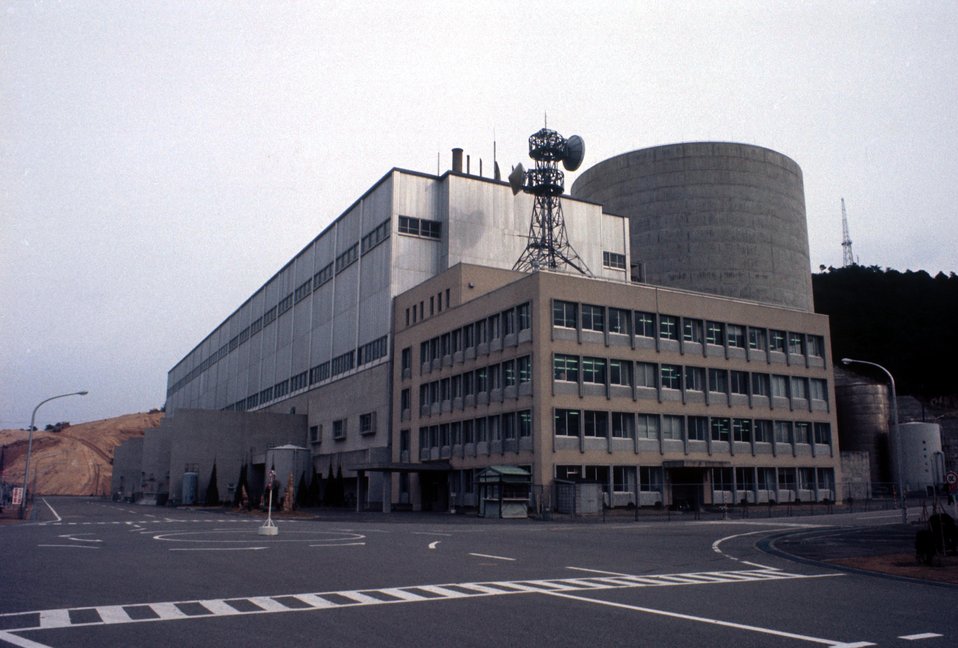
Kansai Plant #1, Mihama, Japan. Kansai Nuclear Reactor.